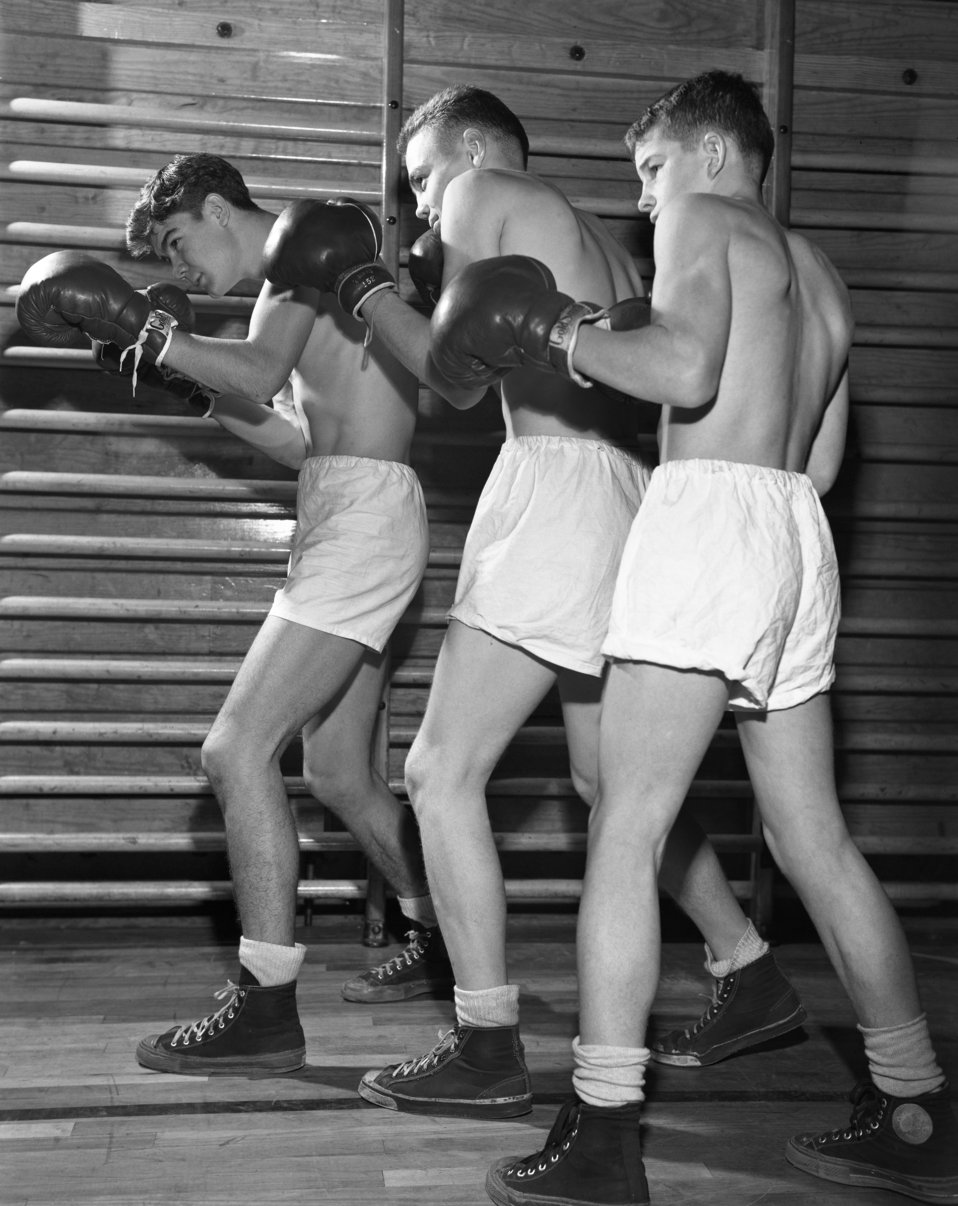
High School Boxing Team Oak Ridge 1947

4061-a DOE photo Ed Westcott 12-5-1947 Oak Ridge Tennessee